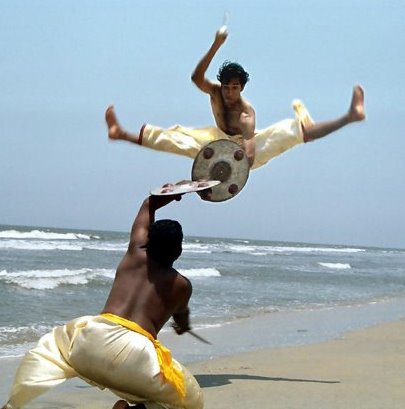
Vaalum-parichayum